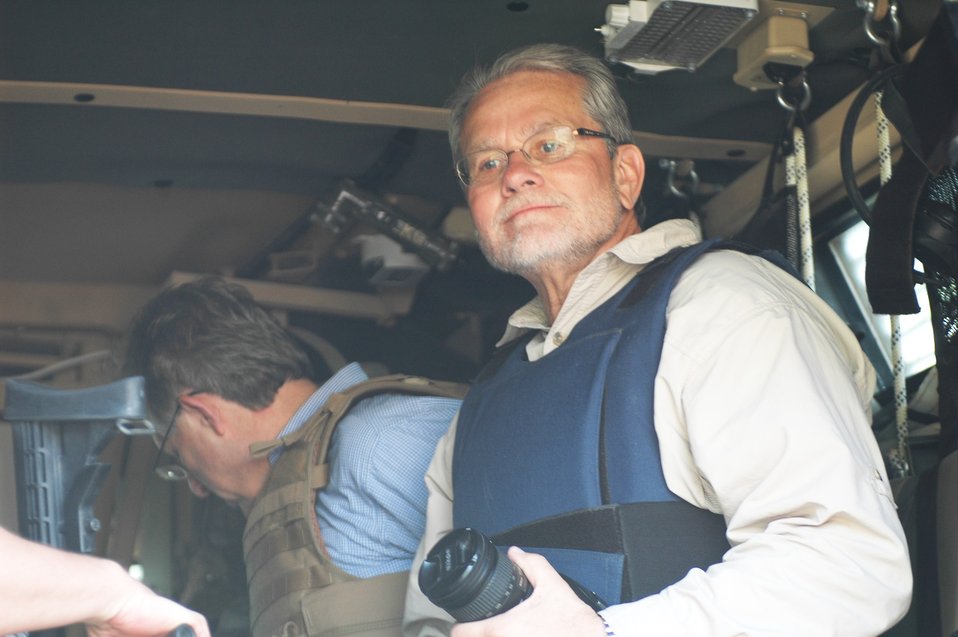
Dr Shah Visits Argandab April 10, 2010